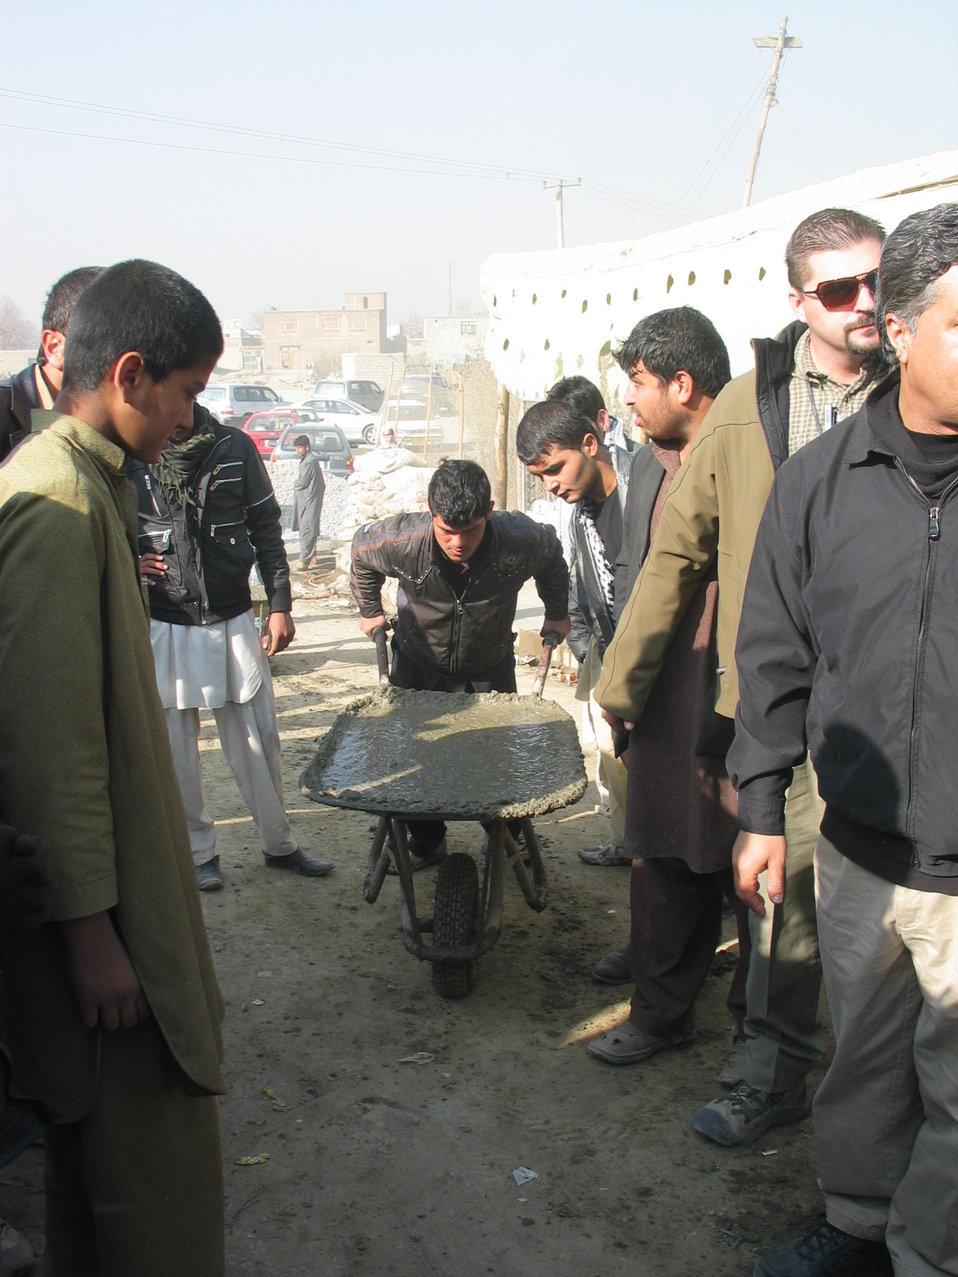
Kabul River Bridge Renovation, December 3, 2010